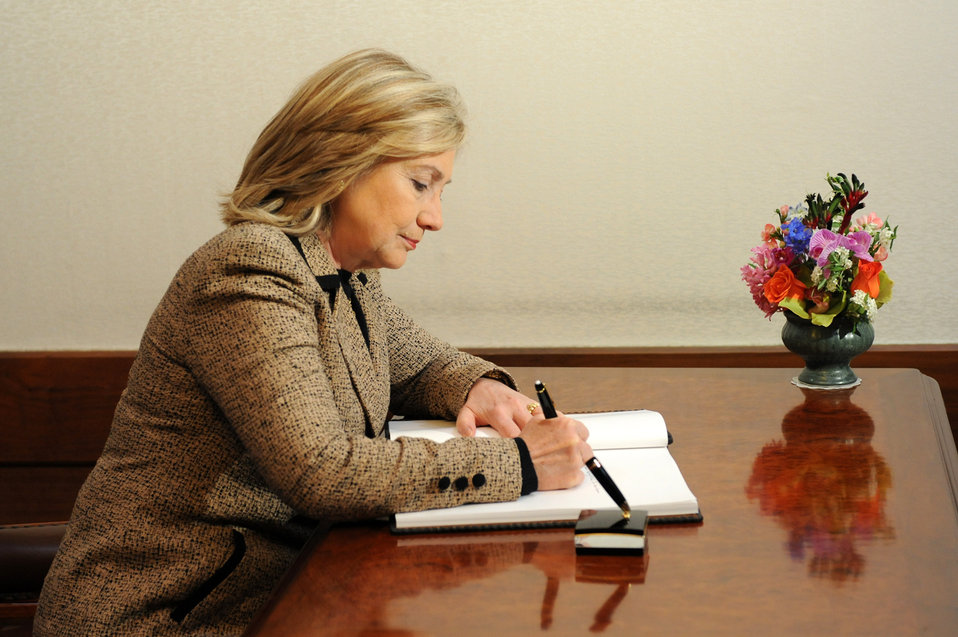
Secretary Clinton Signs Guest Book

U.S. Secretary of State Hillary Rodham Clinton signs the guest book at Republic of Korea Foreign Minister Kim Sung-hwan’s residence in Seoul, South Korea, on April 16, 2011.